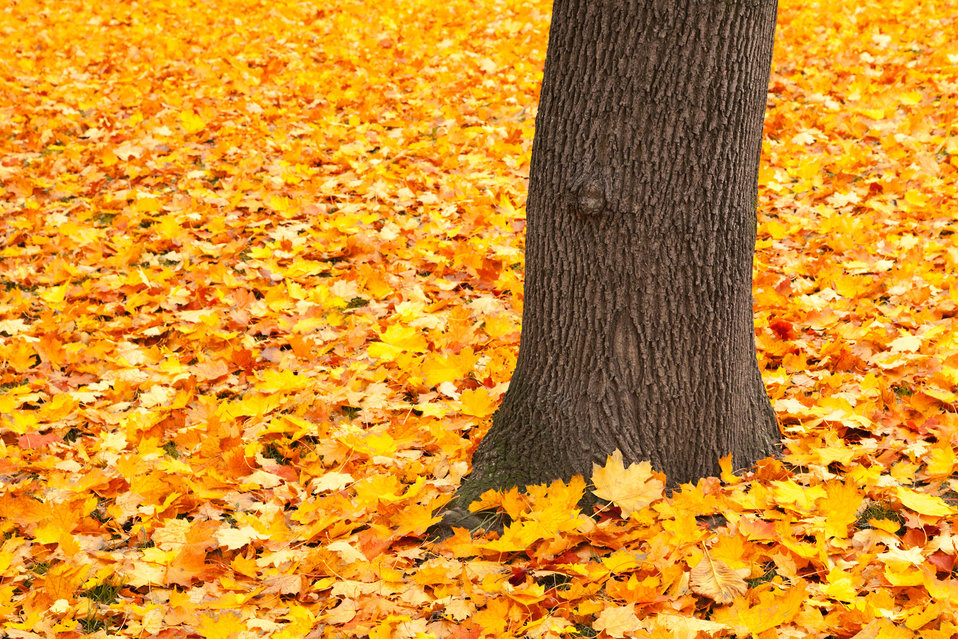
Trunk and fallen leaves

Tree trunk and fallen autumn leaves.